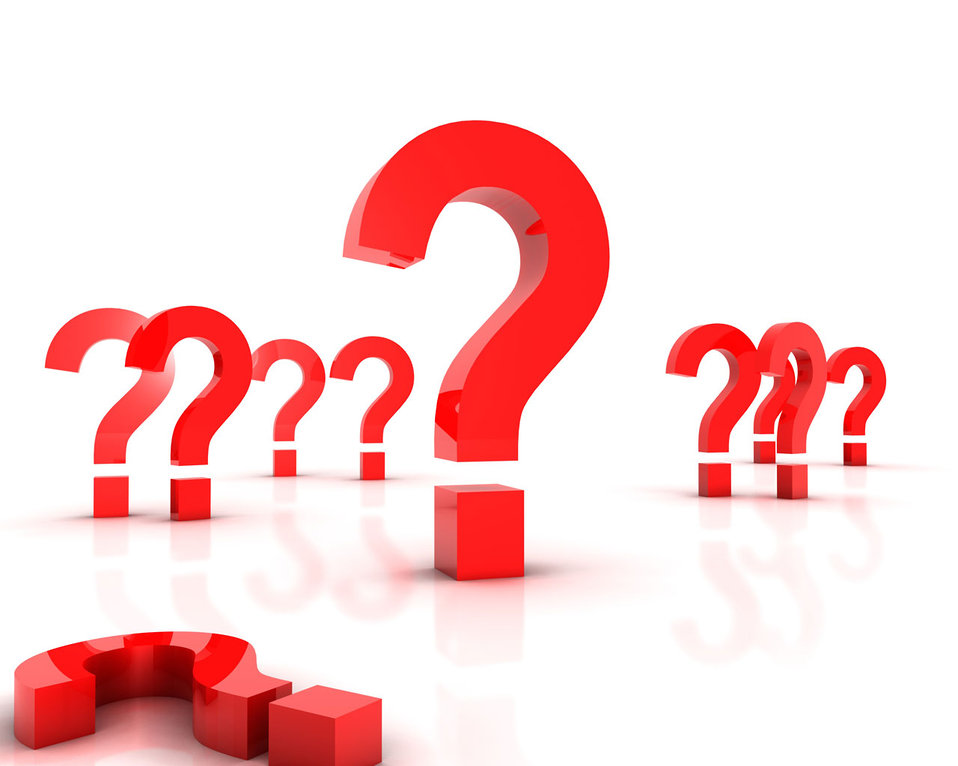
Help

Interogatorio several signal.